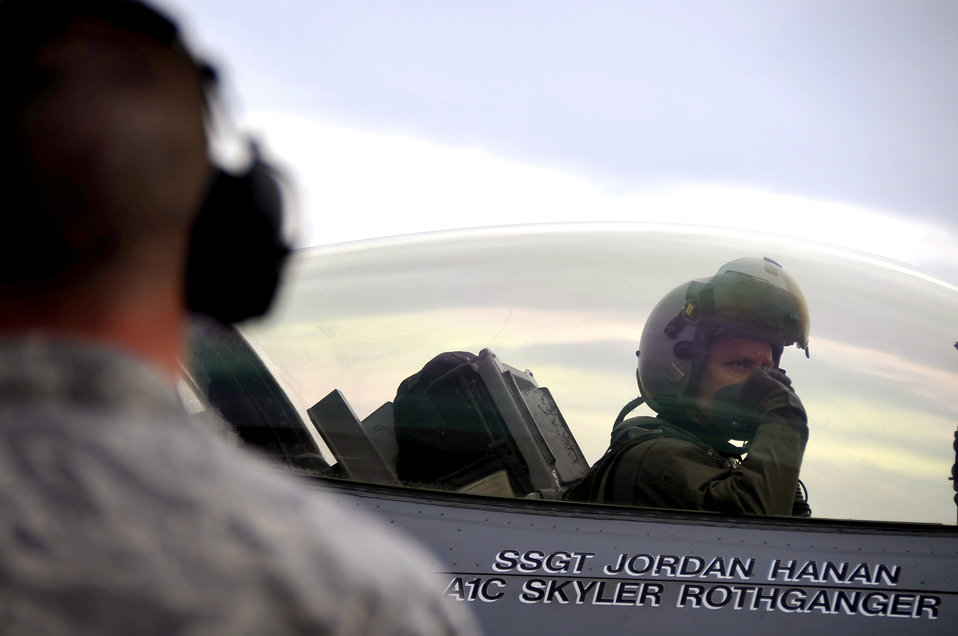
Misawa's Fighting Airmen deploys to South Korea

Lt. Col. Aaron Steffens talks with his crew chief before his departure to South Korea May 7, 2010, at Misawa Air Base, Japan. Colonel Steffens and the 14th Fighter Squadron deployed to South Korea in an effort to maintain regional stability. Colonel Steffens is the 14th Fighter Squadron commander.